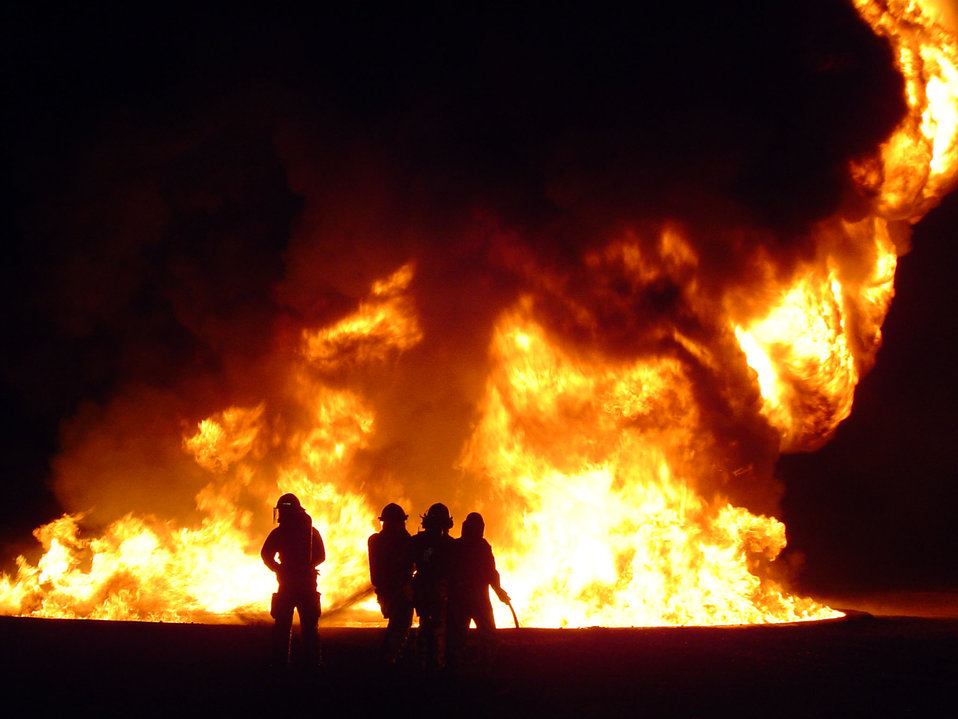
Fire in the sky

OPERATION IRAQI FREEDOM -- Firefighters put out a fire during a rescue and emergency training exercise June 23. The airmen are deployed from Pope Air Force Base, N.C., to the 321st Air Expeditionary Wing at a forward-deployed location in Southwest Asia.